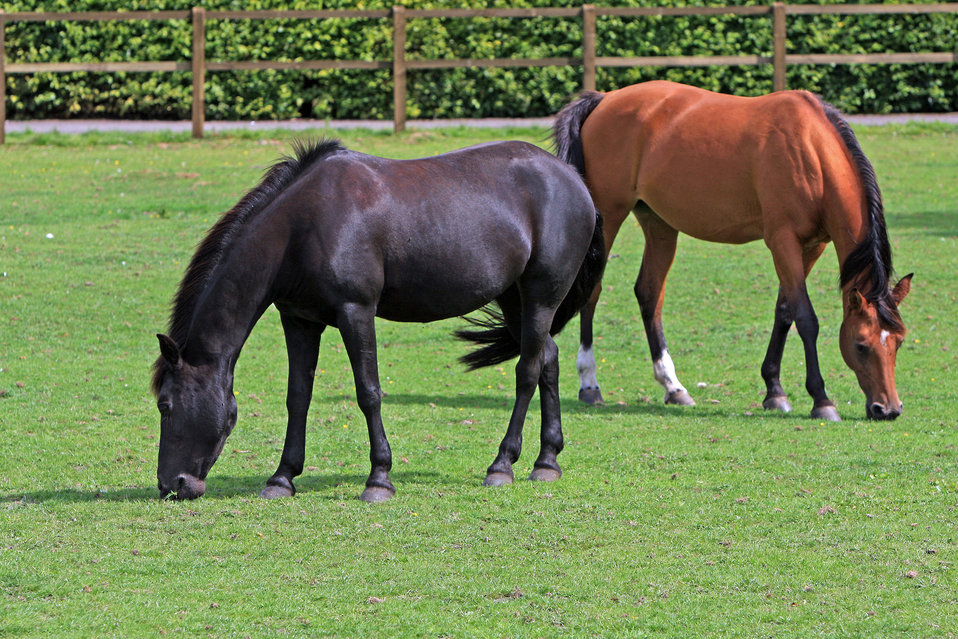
Horses grazing

Two beautiful horses grazing on the green grass.